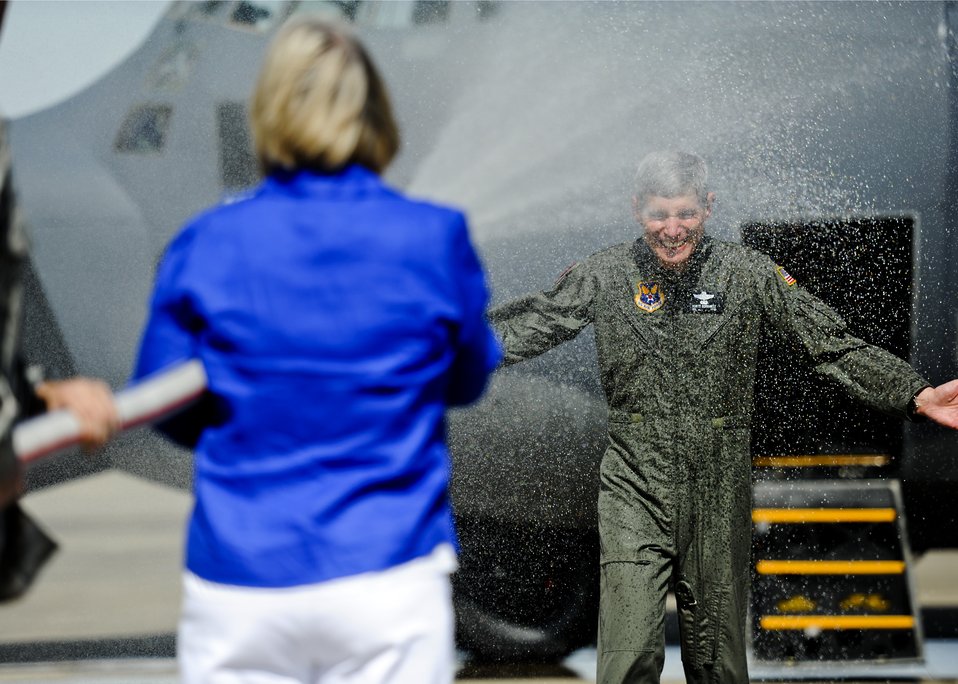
CSAF's

Air Force Chief of Staff Gen. Norton Schwartz gets “hosed down” by his wife Suzie following his last flight as an active duty officer at Hurlburt Field, Fla., July 12, 2012. The MC-130E Combat Talon I crew conducted a local training sortie during the mission. It also served as Schwartz’s “fini flight” in the Air Force.